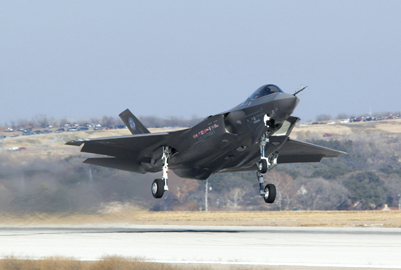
Adjustments put F-35 on track, program director says

The Defense Department's joint strike fighter program is on track to field the F-35 Lightning II in fiscal 2016.